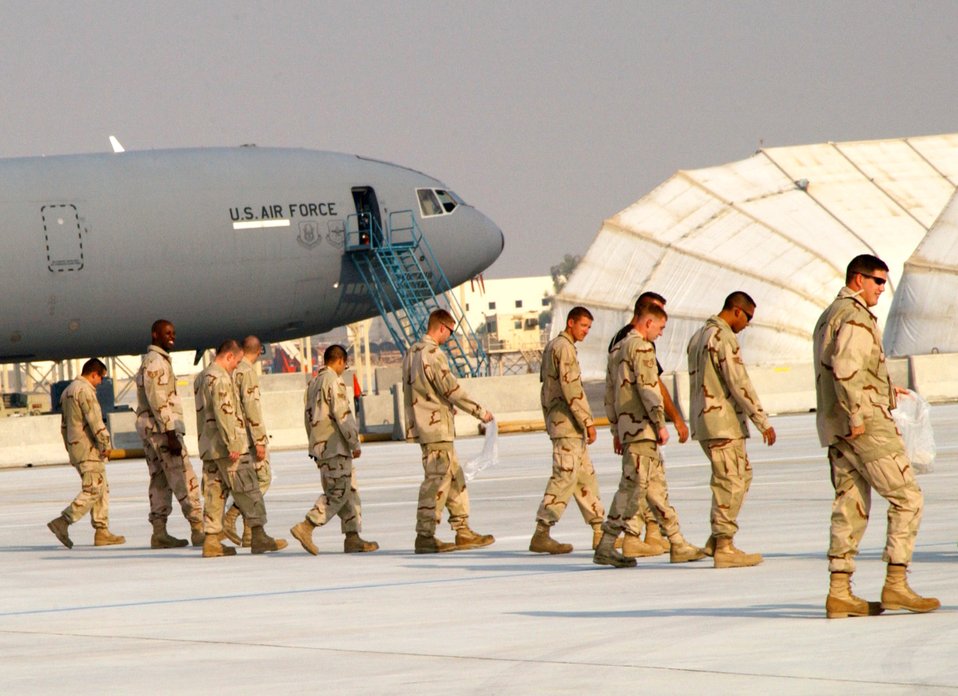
New tanker ramp opens at deployed base

SOUTHWEST ASIA (AFPN) -- Some of the more than 200 members with the 380th Air Expeditionary Wing perform a Foreign Object Damage walk Oct. 22., prior to the opening ceremony of this desert air base's new tanker ramp. The Airmen removed any loose debris from the flightline in an effort to reduce the potential for damage to aircraft.